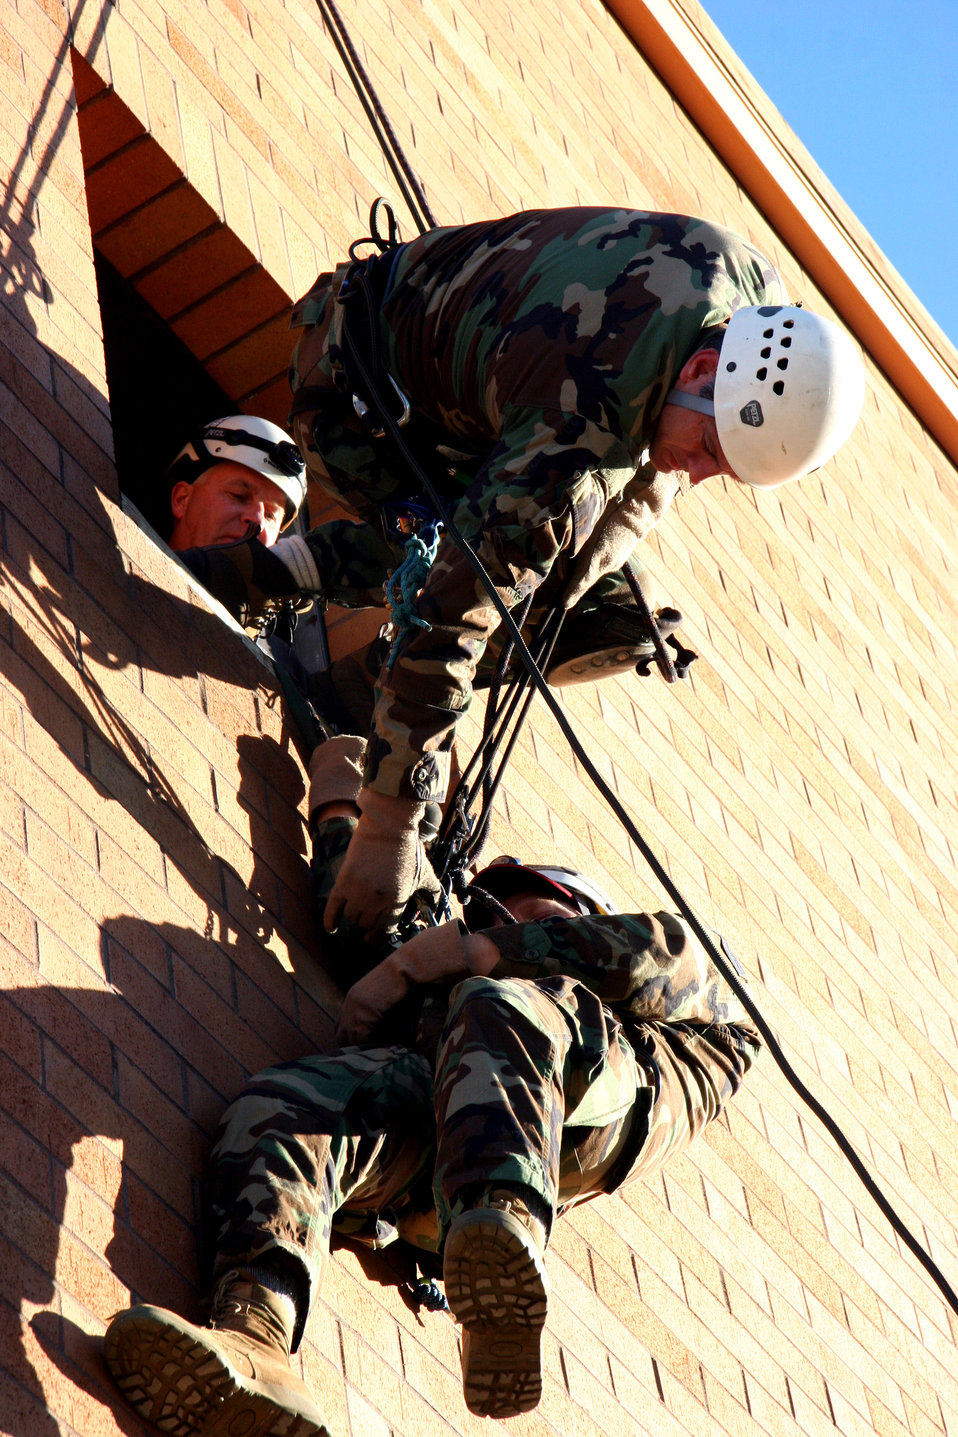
Rescuers learn to make order out of chaos

Dennis O'Connell observes Senior Master Sgt. Jim Eddings rappel down a four-story training tower in Vancouver, Wash., to transfer Senior Master Sgt. David Armstrong to his rope system during a rope rescue exercise Oct. 21. Sergeant Eddings and Sergeant Armstrong are pararescuemen with the 304th Rescue Squadron. Mr. O'Connell is a Roco Rescue instructor.